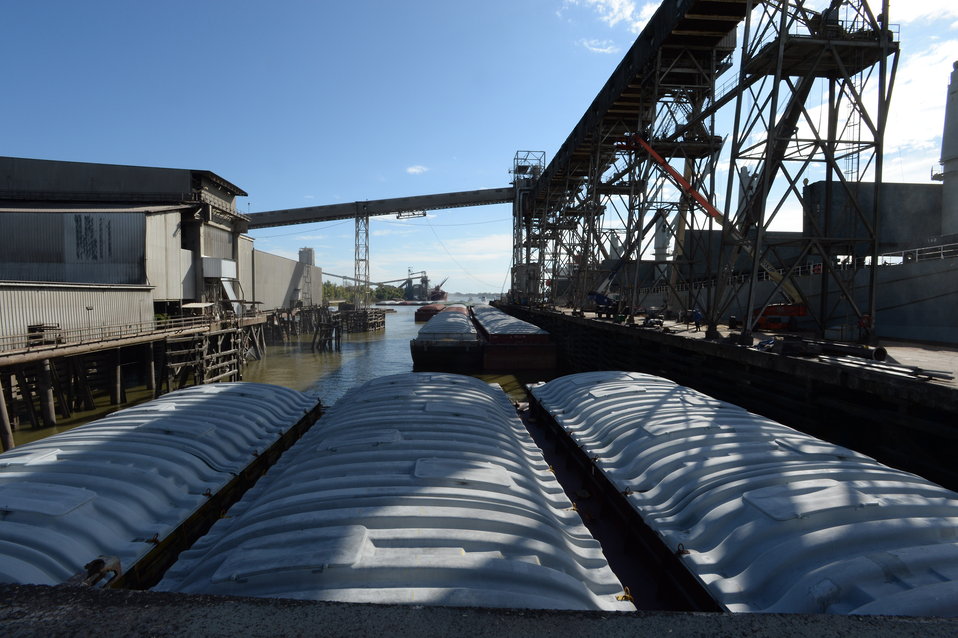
Grain barges tied up to pier near grain elevators near the Port of New Orleans in New Orleans, LA on Tuesday, Nov. 19, 2013.